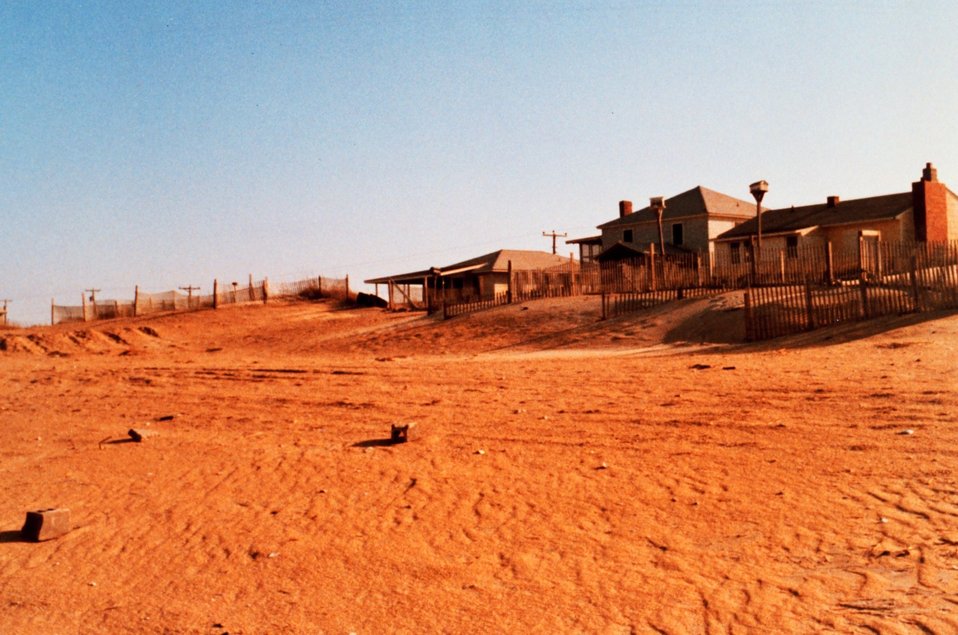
Summer homes on a deserted winter beach